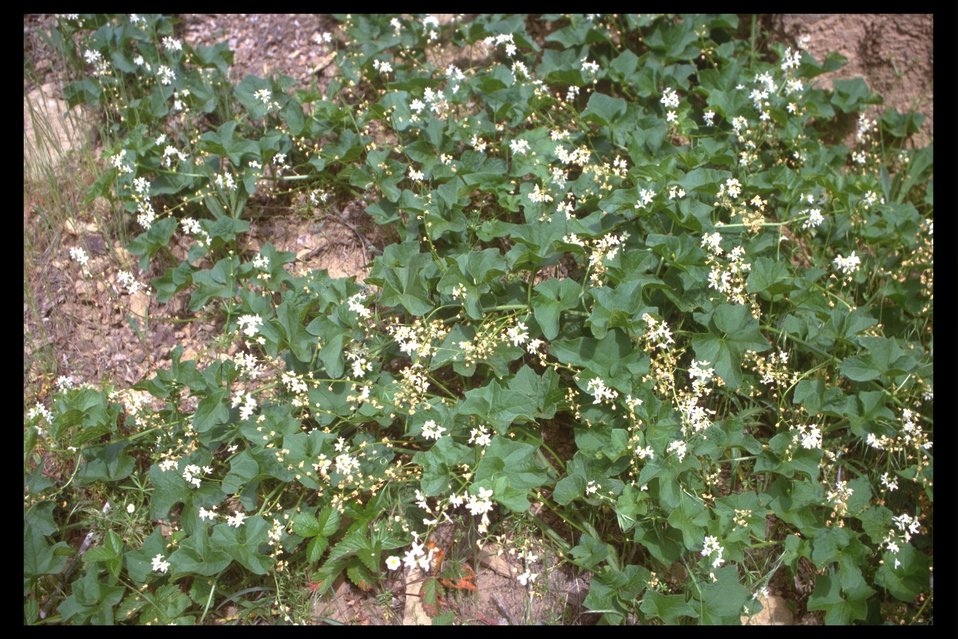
Wild Cucumber, also called the Coast Manroot, (Marah oreganus) found at Shady Cove near the Rogue River.